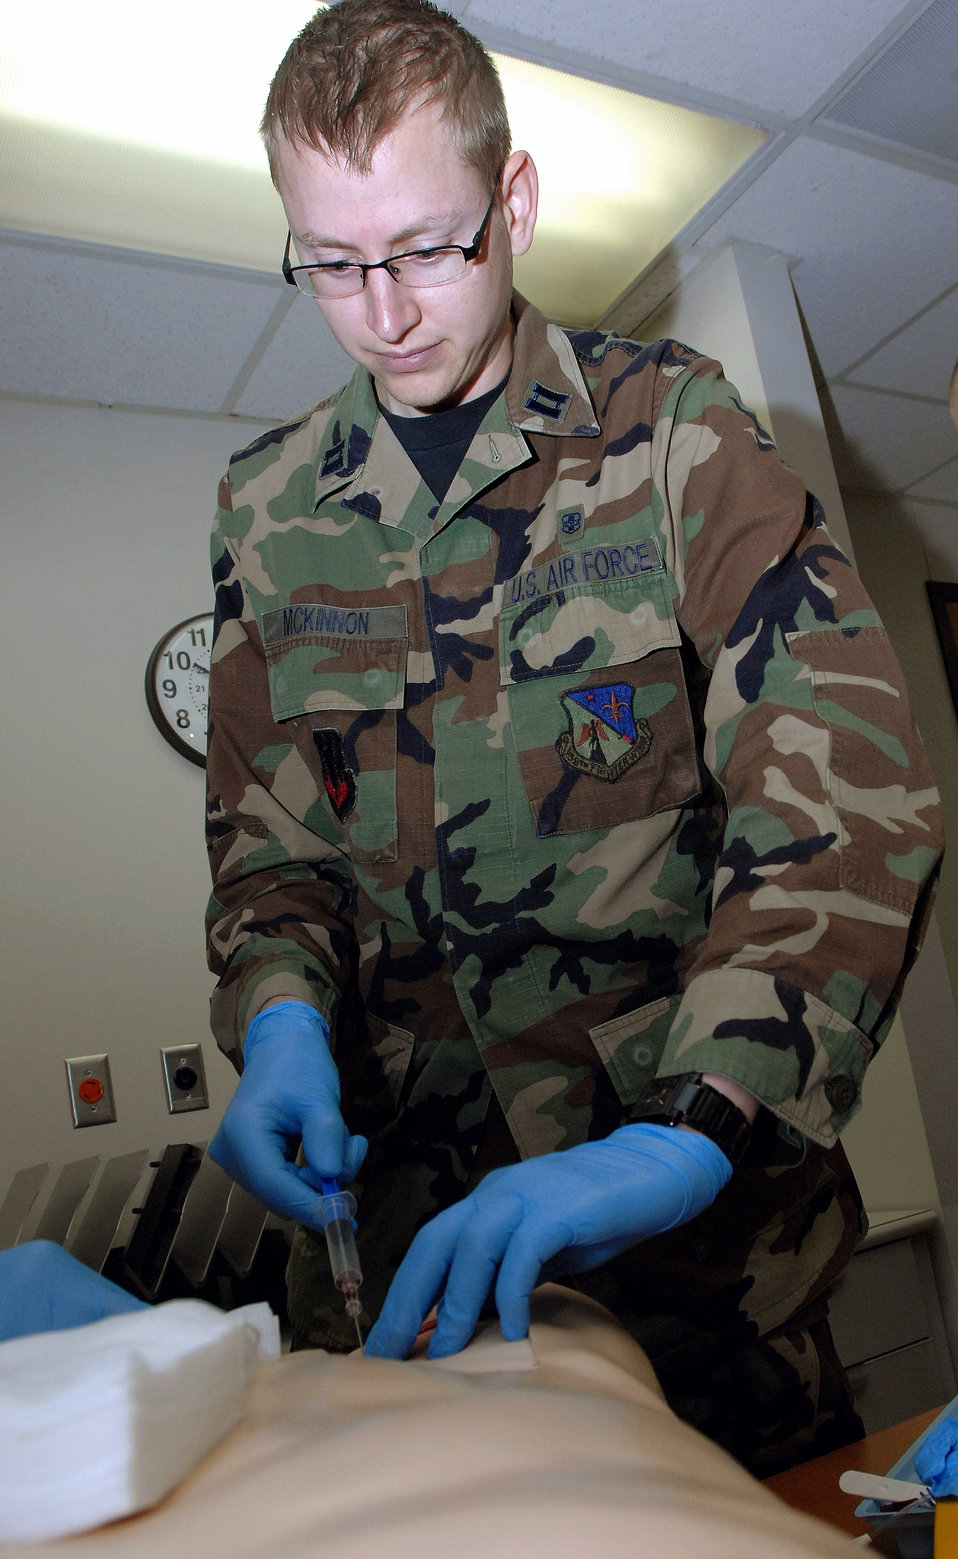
Simulation center prepares medics for saving lives

Capt. (Dr.) Nicholas McKinnon practices drawing blood using a mannequin during a training class held in the Wilford Hall Medical Center's simulation center at Lackland Air Force Base, Texas. Dr. McKinnon, a psychiatry resident with the 59th Mental Health Squadron, trained along several other residents from various medical fields. The simulation center supports more than 10 training courses in numerous disciplines with realistic training. The newest technology is incorporated into the mannequins so they are capable of life-like responses to treatment.